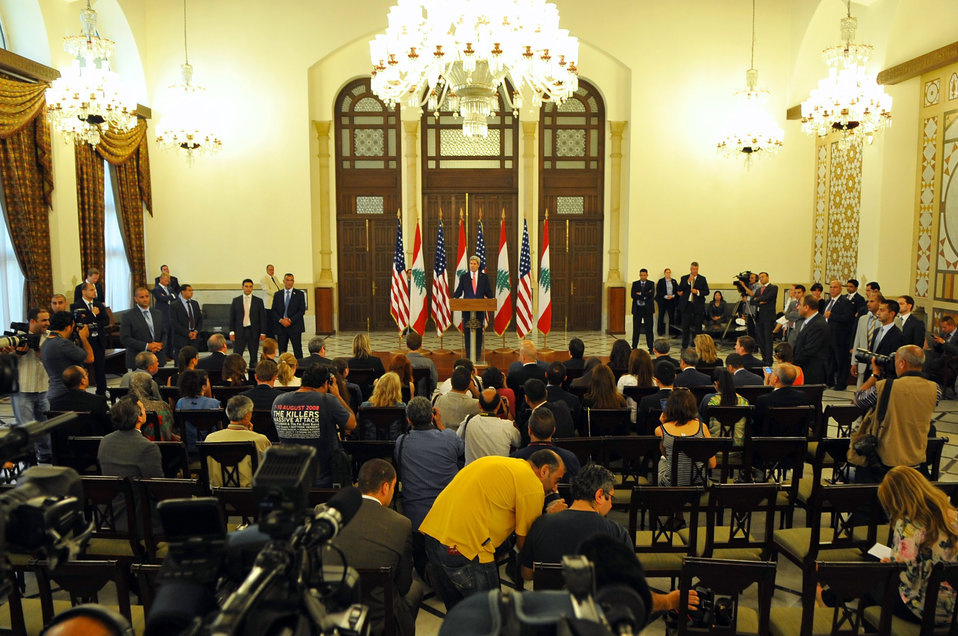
Secretary Kerry Holds News Conference at Lebanese Prime Minister's Office

U.S. Secretary of State John Kerry holds a news conference after meeting with Lebanese Prime Minister Tammam Salam in Beirut, Lebanon, on June 4, 2014.